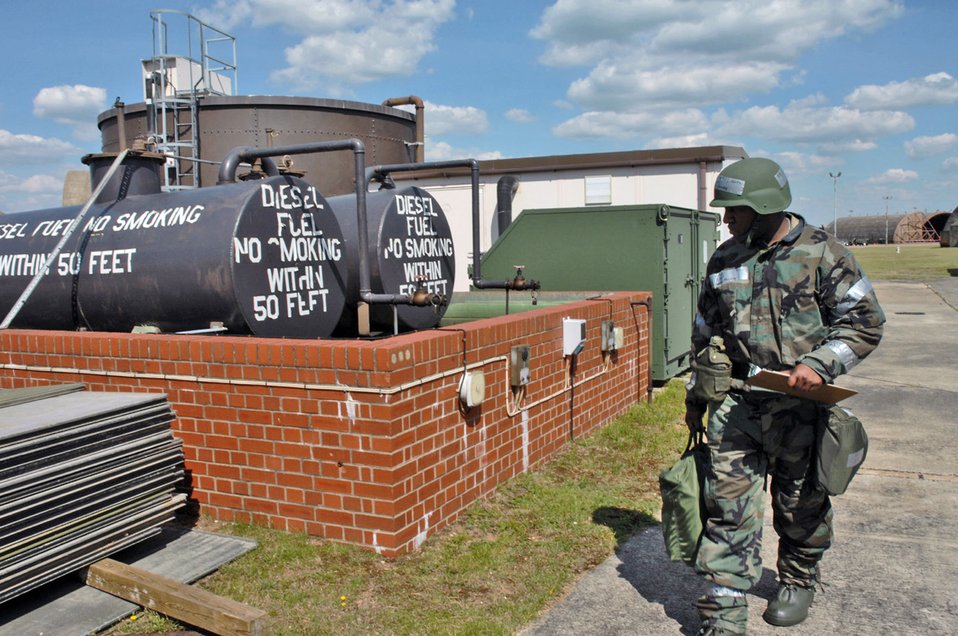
Ops Eval challenges Airmen

Staff Sgt. Jermaine Harvey conducts a sweep to check for unexploded ordnance outside the squadron operations center during an operations evaluation July 31 at Royal Air Force Lakenheath, England. In this portion of the ops eval, the squadron operations center has been